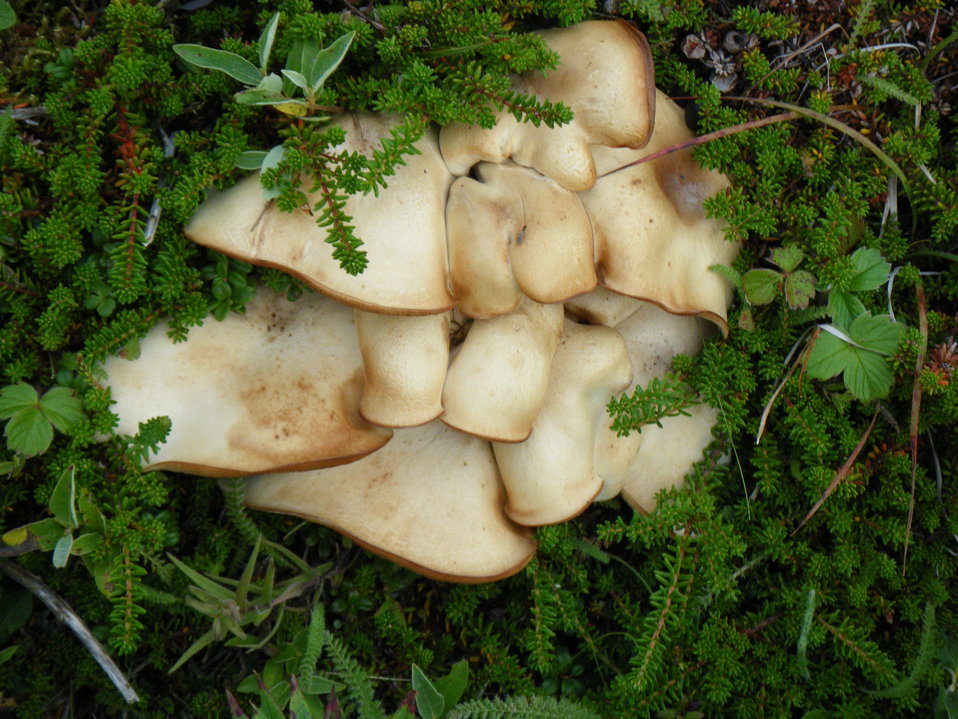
mushrooms

Izembek National Wildlife Refuge